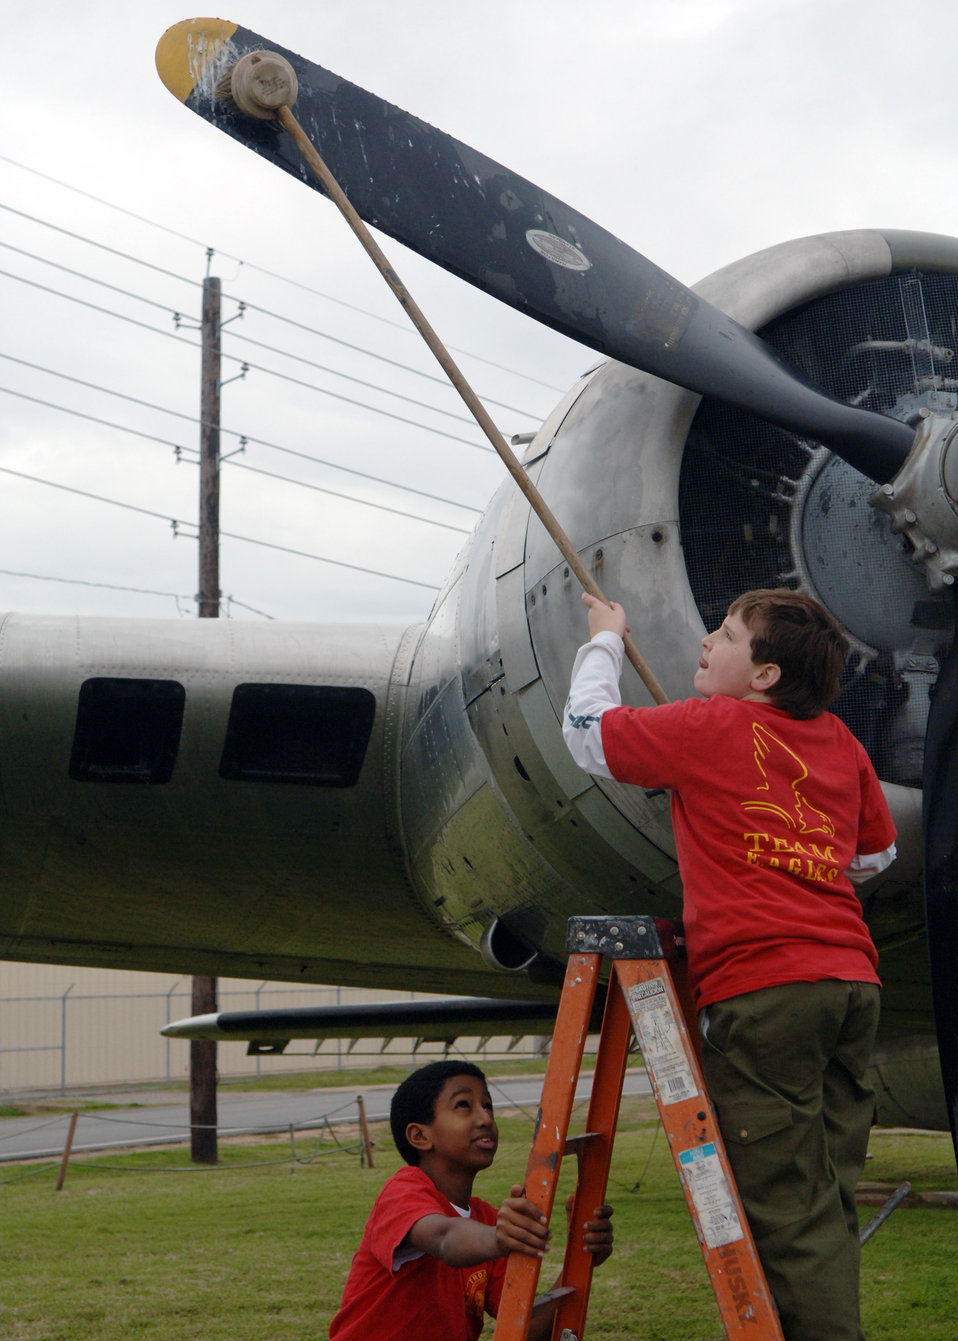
Scouts keep 'em shined up

Boy Scouts Adam Mulugeta (steadying ladder) and Ryan Porter tend to one of the planes Jan. 27 at the Eighth Air Force Museum located on Barksdale Air Force Base, La. The Scouts, members of Troop 198 in Plano, Texas, traveled to Barksdale to complete this service project.